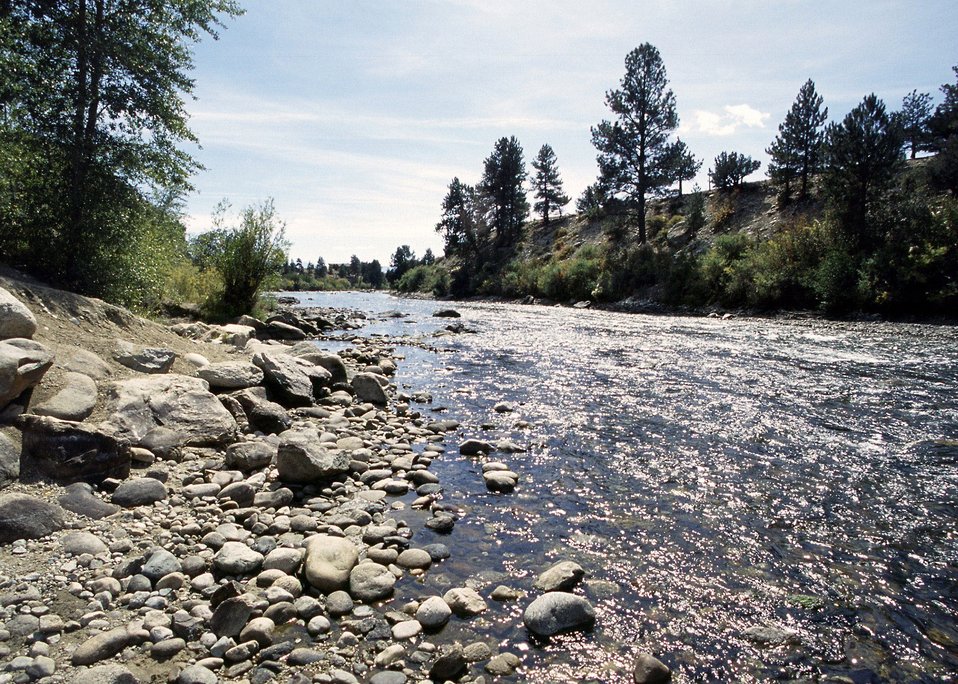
Arkansas River